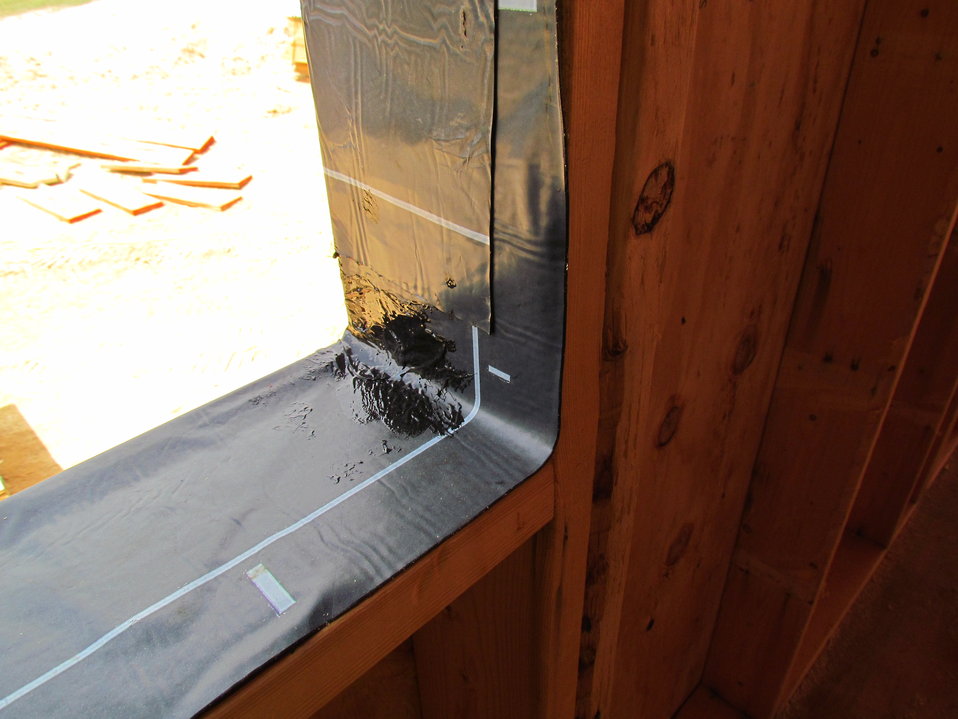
Net-Zero Energy Residential Test Facility - Photo showing detail of air/moisture barrier installation in window opening.